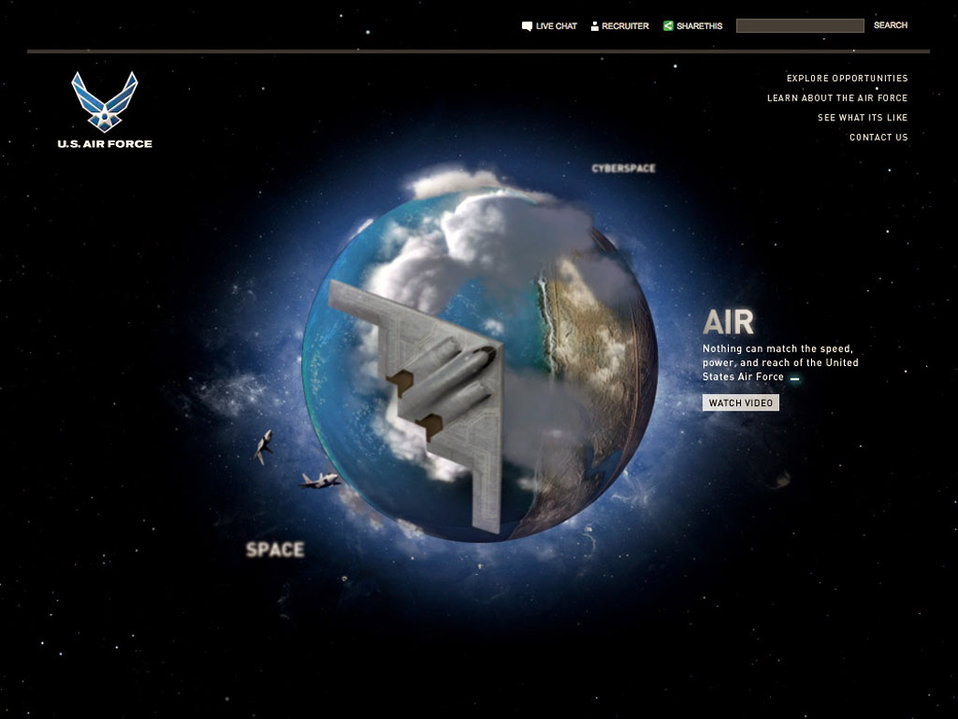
Air Force recruiting Web site redesign launched

Incorporating the latest Internet technologies while reflecting the way ahead for the service, Air Force Recruiting Service officials launched their redesigned Web site Dec. 15 at airforce.com.